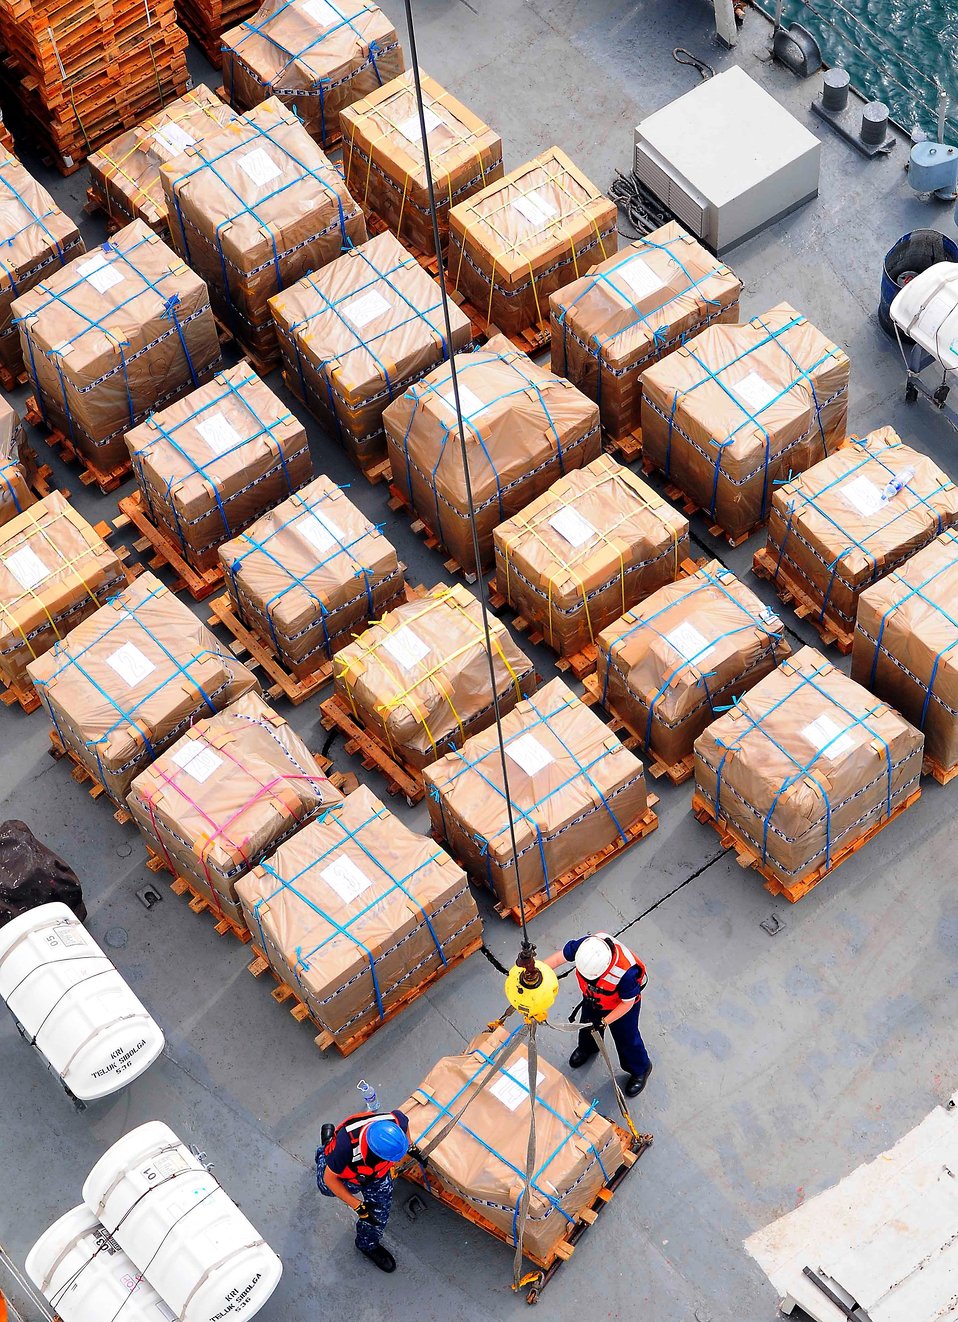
Sailors Secure a Pallet of Medical Supplies

Sailors assigned to the Military Sealift Command hospital ship USNS Mercy (T-AH 19) secure a pallet of medical supplies to a crane lift during a stores onload in support of Pacific Partnership 2010 on July 7, 2010. Mercy is en route to Indonesia during the fifth in a series of annual U.S. Pacific Fleet humanitarian and civic assistance endeavors to strengthen regional partnerships.